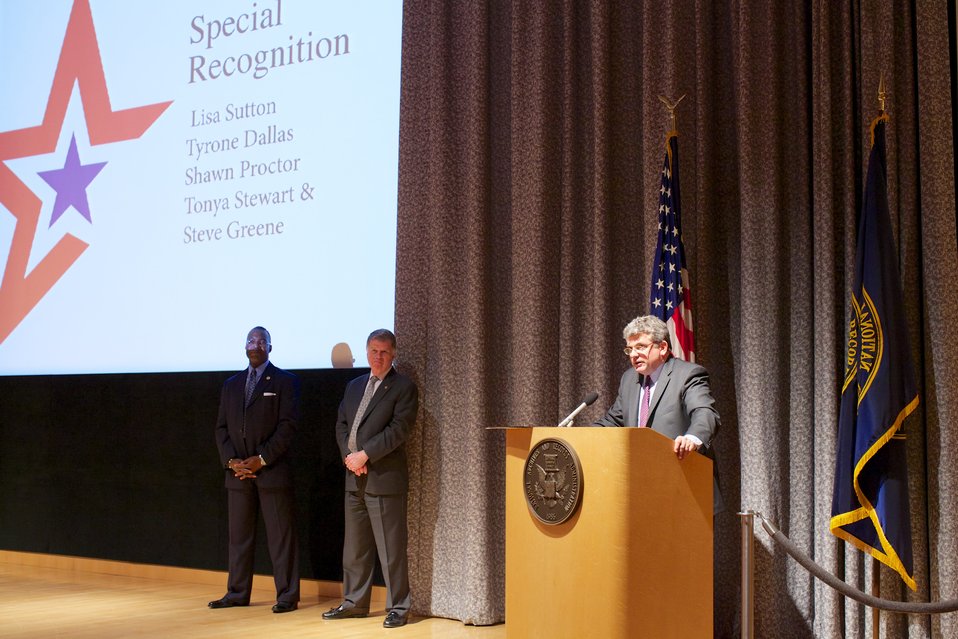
CFC Recognition Event